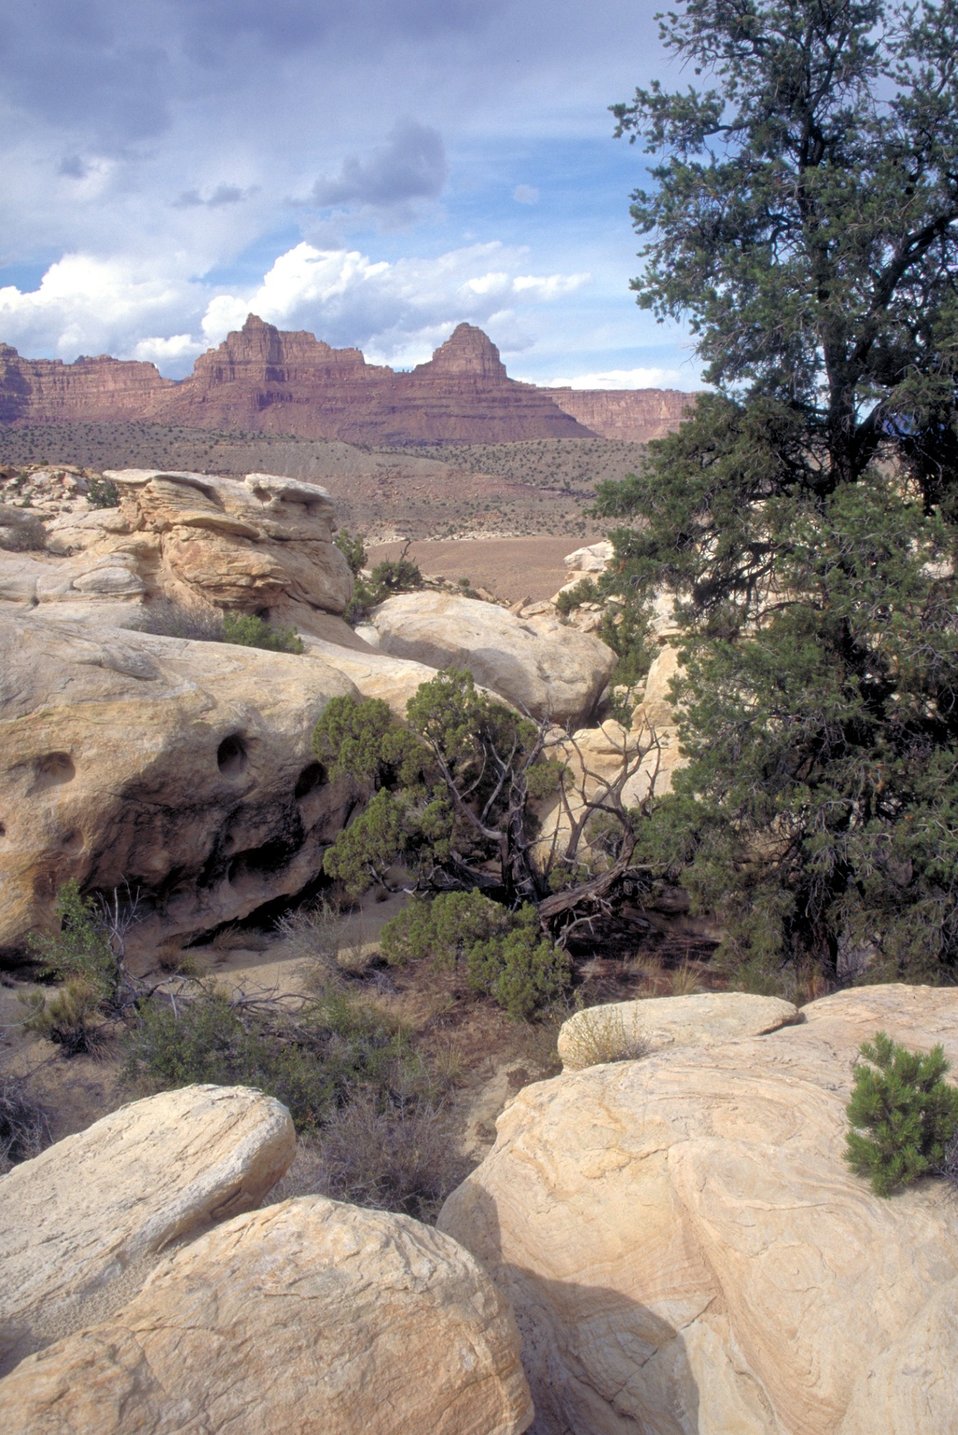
Desolation/Gray Canyons near Price, Utah.